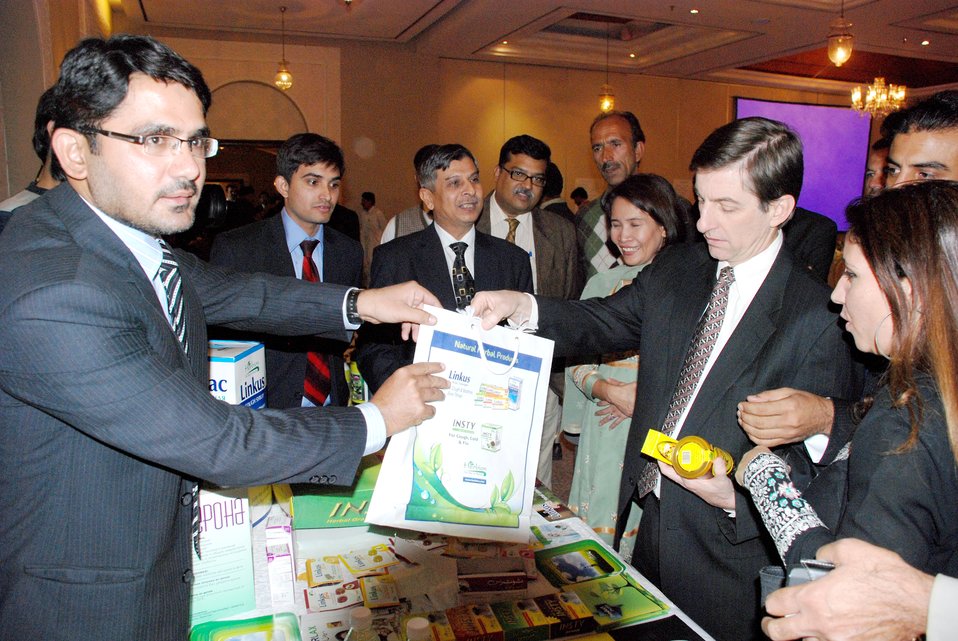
Industry Conference- Medicinal Plants and Honey

USAID Mission Director, Andrew Sisson talking to the Manufacturer of herbal medicines